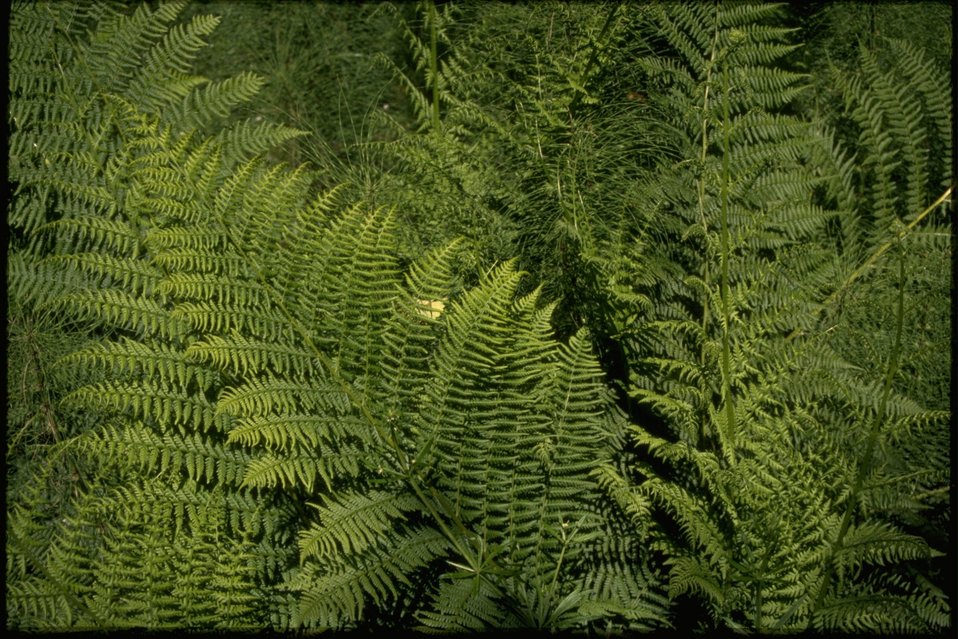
Ferns. Polypodiaceae family.